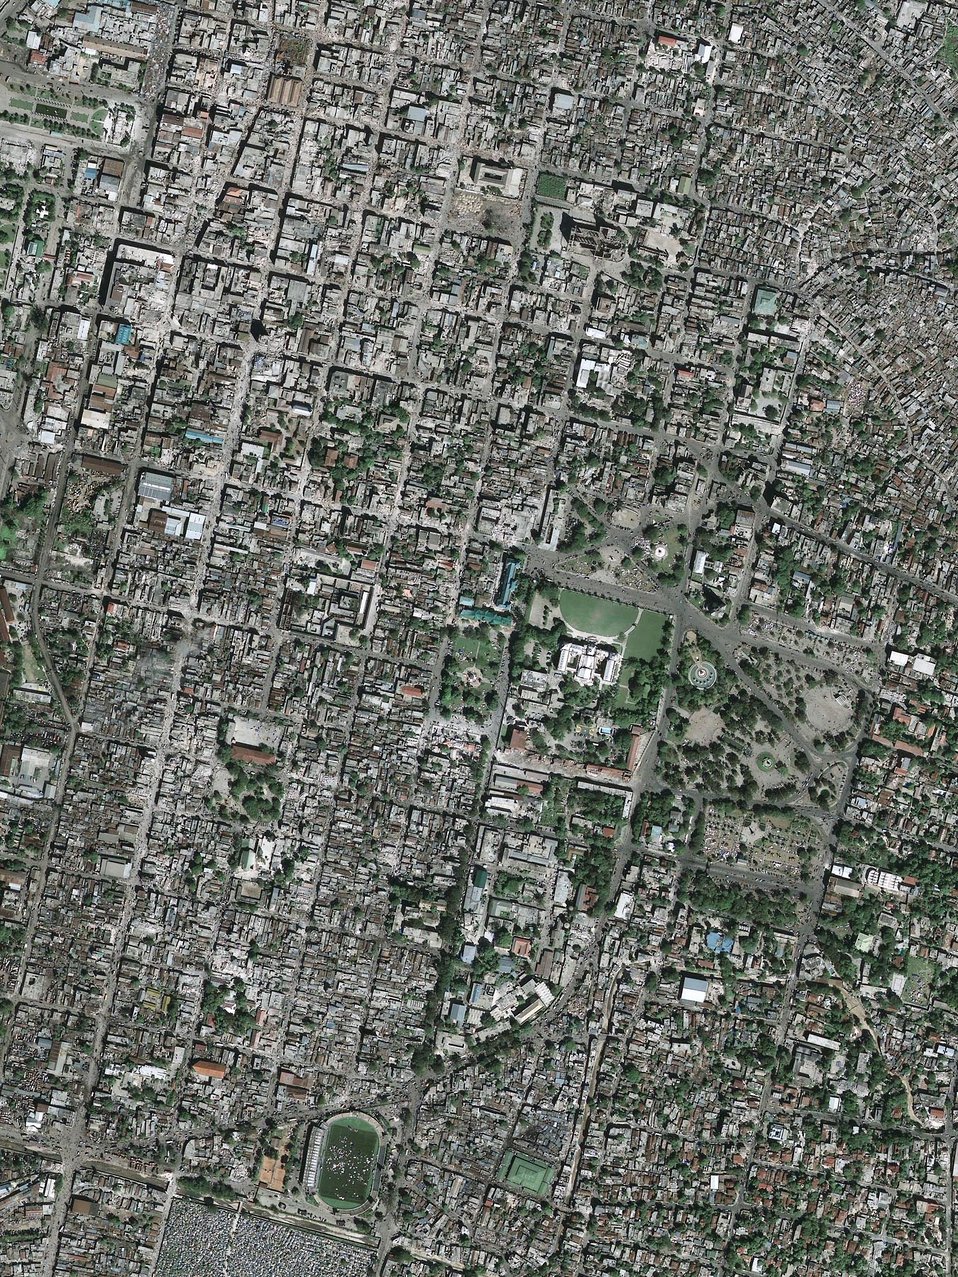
Eagle Vision

A commercial satellite image downloaded and processed by the Eagle Vision System, managed by specialists in the Electronic Systems Center at Hanscom Air Force Base, Mass., shows the destruction in Port-au-Prince, Haiti, following this week's massive earthquake there. Such images are helping disaster response officials provide faster and safer assistance to residents there.